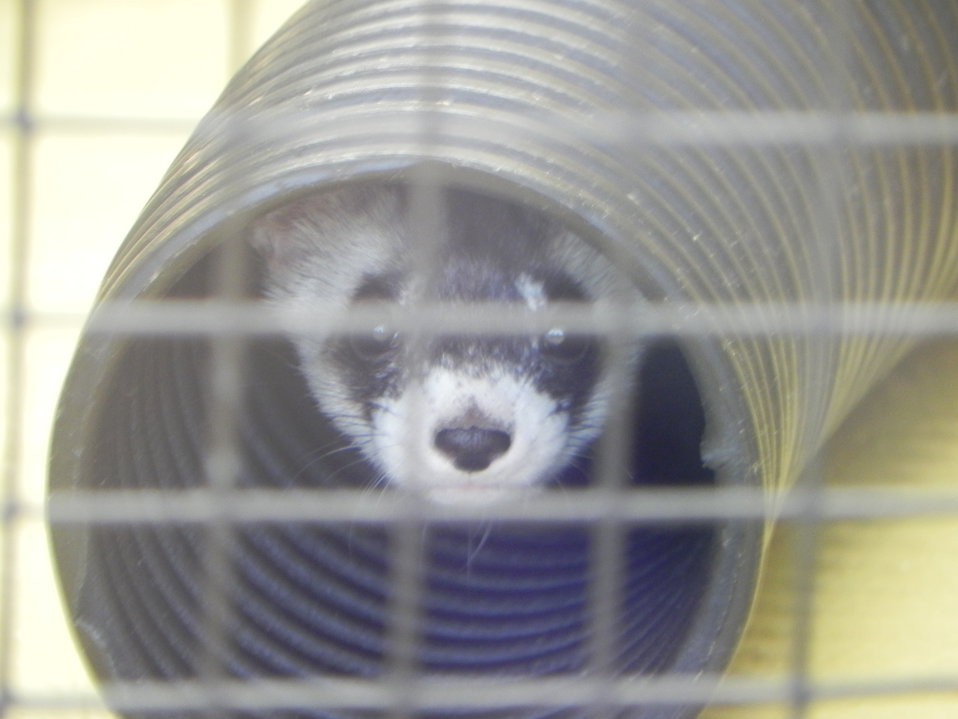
Black-footed Ferret Breeding Center at the Phoenix Zoo

The Black-footed Ferrets in the Breading Center at the Phoenix Zoo 11/18/2010.